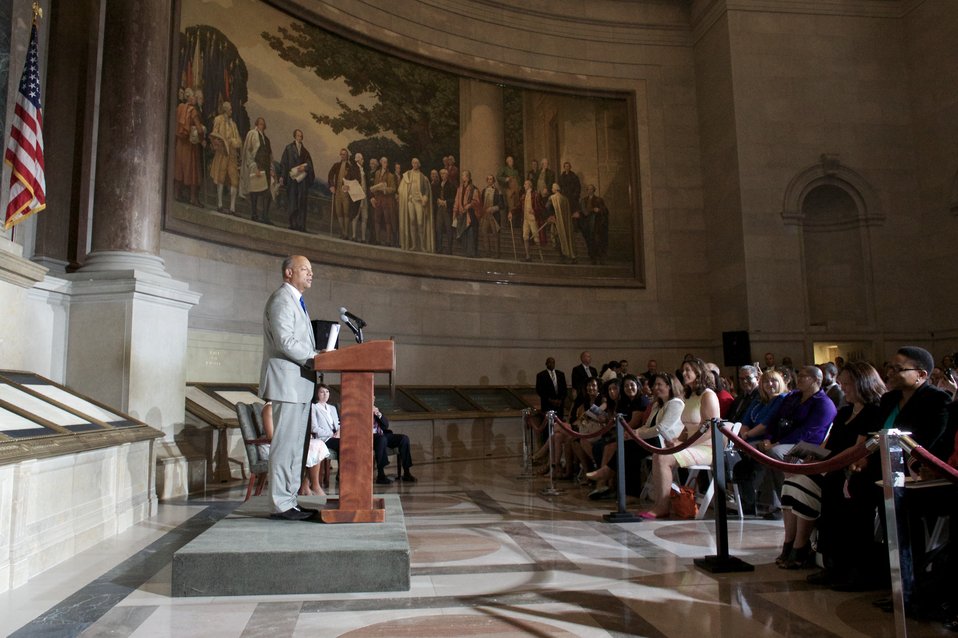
Naturalization Ceremony with Michelle Obama